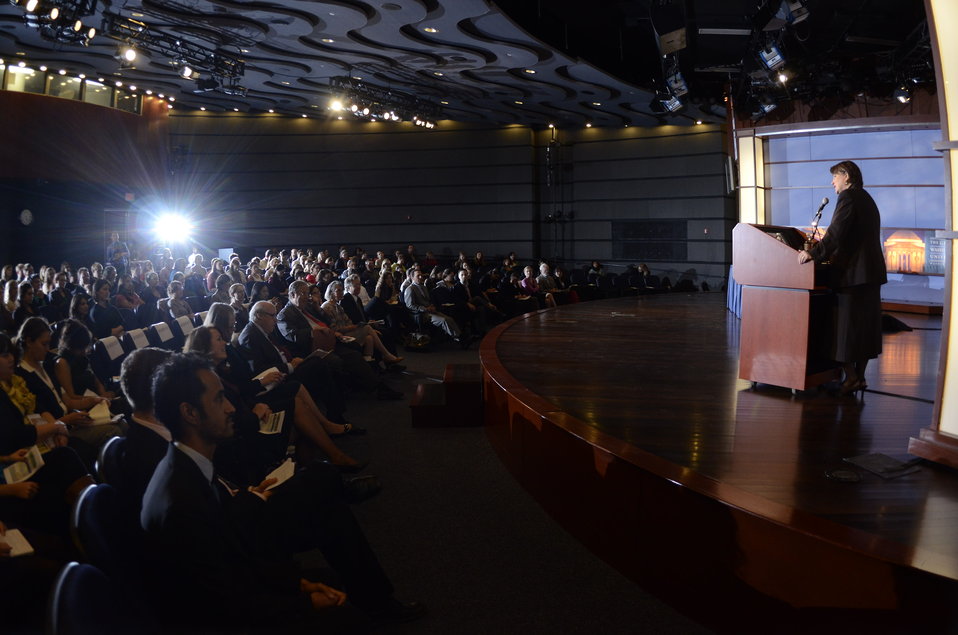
Agriculture Deputy Secretary Dr. Kathleen Merrigan keynote speaker 'Shaping the Farm Bill for a Sustainable Future.' Forum at the Trachtenberg School of Public Policy and Public Administration, George Washington University in Washington, D.C., on Thursday, March 1, 2012.